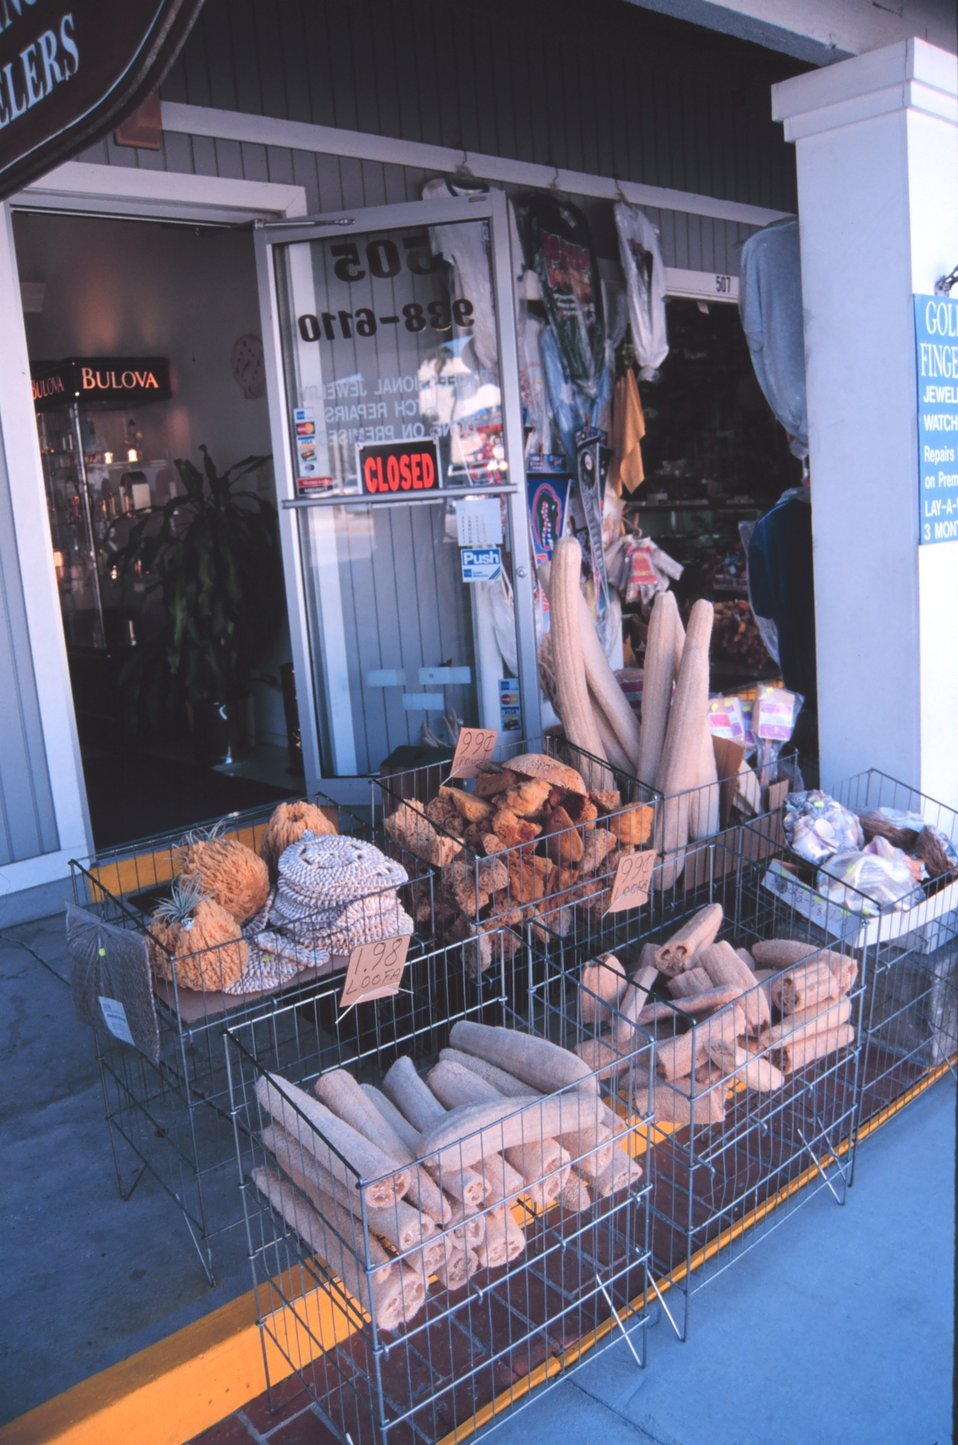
Sponges and other paraphernalia of the sponge industry in a tourist market